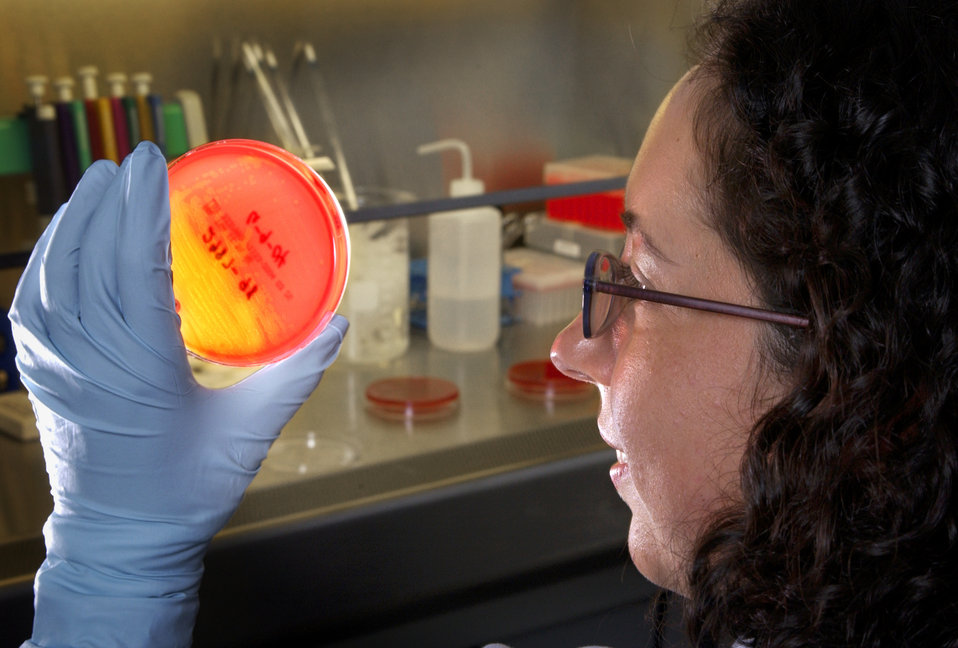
Training as a fellow in the CDC's Respiratory Diseases Branch, Nina Glass was shown here performing laboratory functions while in a containment lab. She's shown closely examining an agar-filled Petri dish, which had been inoculated with a specimen, the results of which Ms. Glass was determining. Note that protective gloves were worn when she was handling the culture dishes.